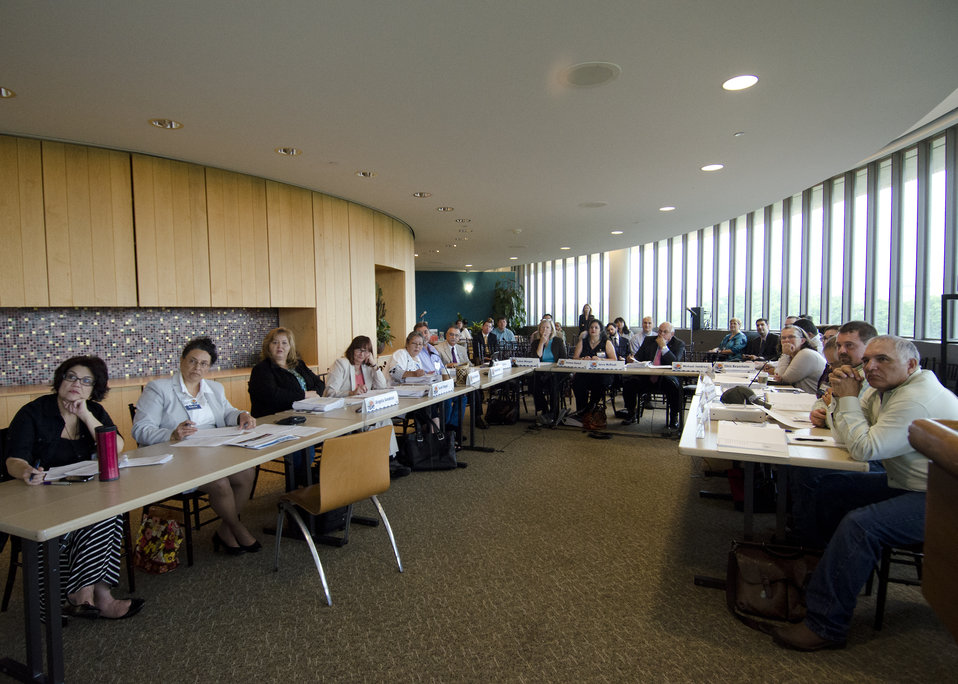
The first business meeting of the U.S. Department of Agriculture's (USDA) Council for Native American Farming and Ranching (CNAFR) meets at the first business meeting of the U.S. Department of Agriculture’s (USDA) Council for Native American Farming and Ranching (CNAFR) held at the National Museum of the American Indian in Washington, D.C., on Tuesday, Aug. 14, 2012. CNAFR was created to advise the Secretary on ways to eliminate barriers to participation for Native American Farmers and Ranchers in USDA programs. The Council was established as part of the Keepseagle settlement, and is conducted under the oversight of USDA's Office of Tribal Relations under the Office of the Secretary of Agriculture.